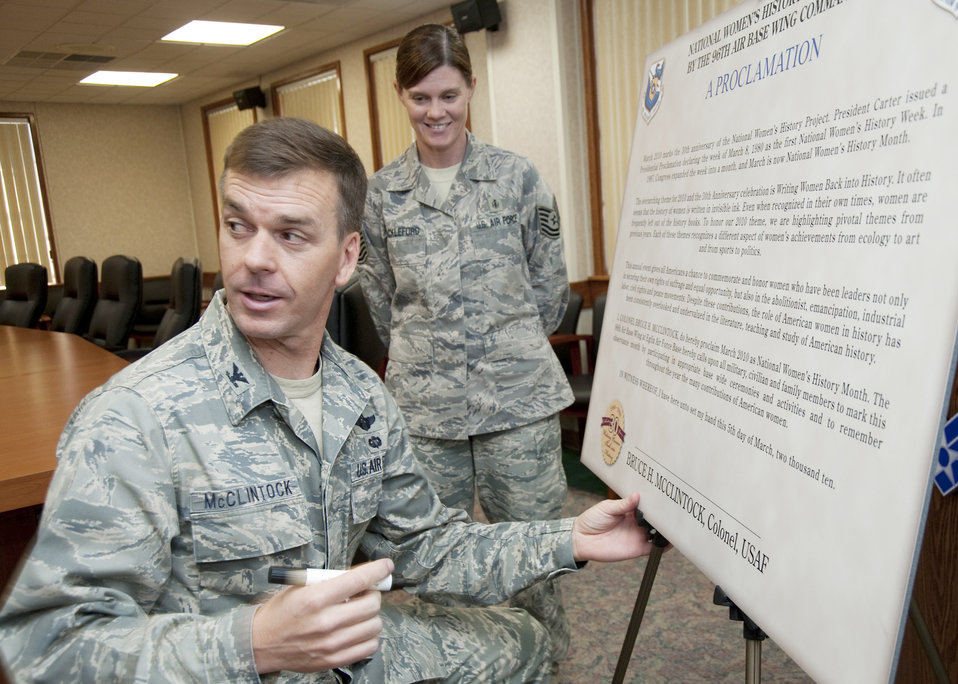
Women's History Month offers chance to look back, move forward

Col. Bruce McClintock signs a Women's History Month proclamation beginning the month of activities to inform the public on the historic efforts of women March 5, 2010, at Eglin Air Force Base, Fla. Colonel McClintock is the 96th Air Base Wing commander.